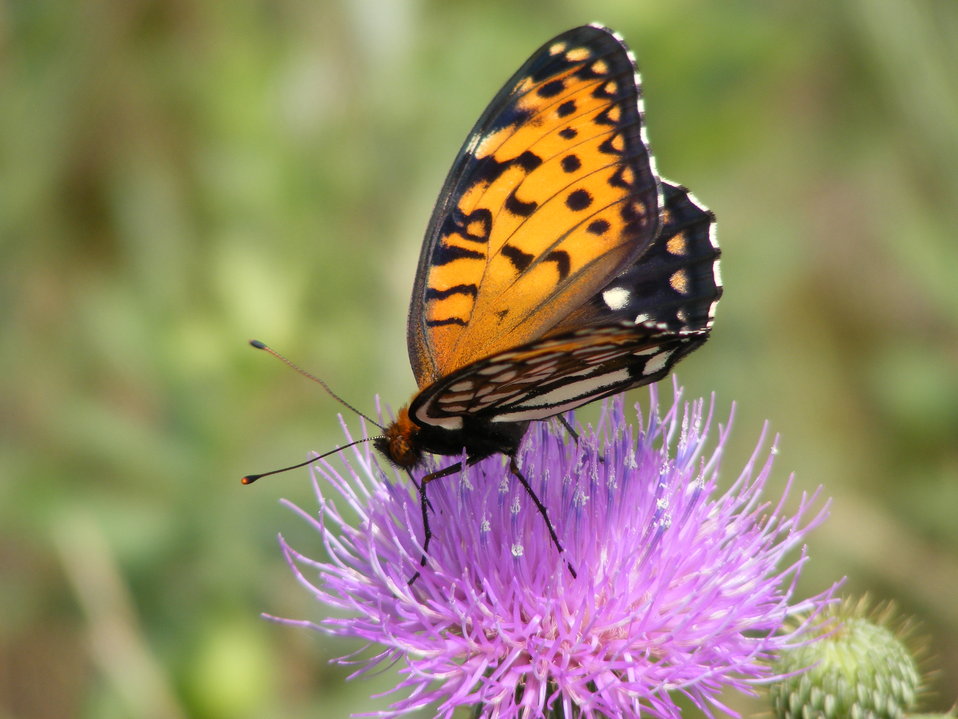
Drink Up

A native thistle provides a soft landing and nectar for the regal fritillary butterfly. The loss of native prairie and the hundreds of flowers that grow there affects the insects and lesser known wildlife that need this habitat to thrive. Photo taken on a Waterfowl Production Area in Waubay Wetland Management District, SD.